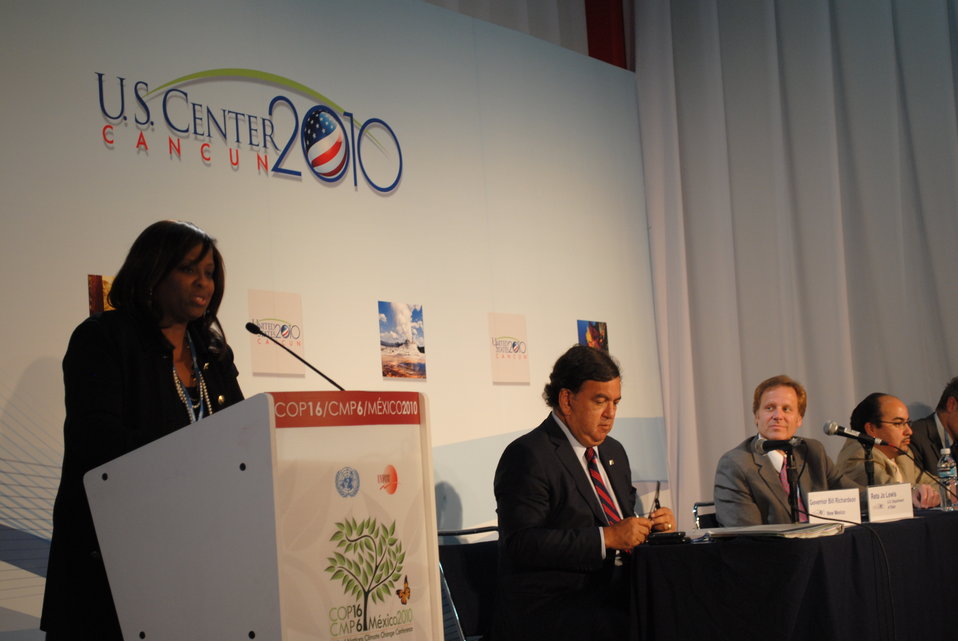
Special Representative Lewis Highlights Collaborations Among State Governments

U.S. Department of State Special Representative Reta Jo Lewis highlights collaborations among state governments the U.S. Center at COP-16 in Cancun, Mexico, on December 6, 2010. New Mexico Governor Bill Richardson, Director of the Illinois Environmental Protection Agency Director Doug Scott, and Deputy Secretary for Border Affairs for the California Environmental Protection Agency Ricardo Martinez are sitting to the right of Special Representative Lewis.